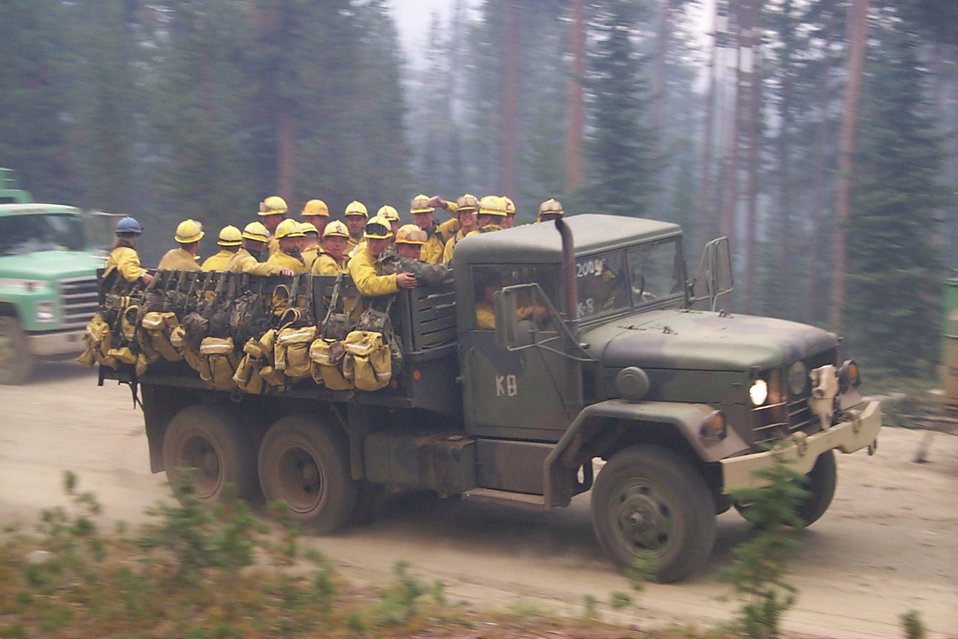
Fire fighter transport Fire Clearwater Fire Salmon Field Office USRD Upper Snake River District